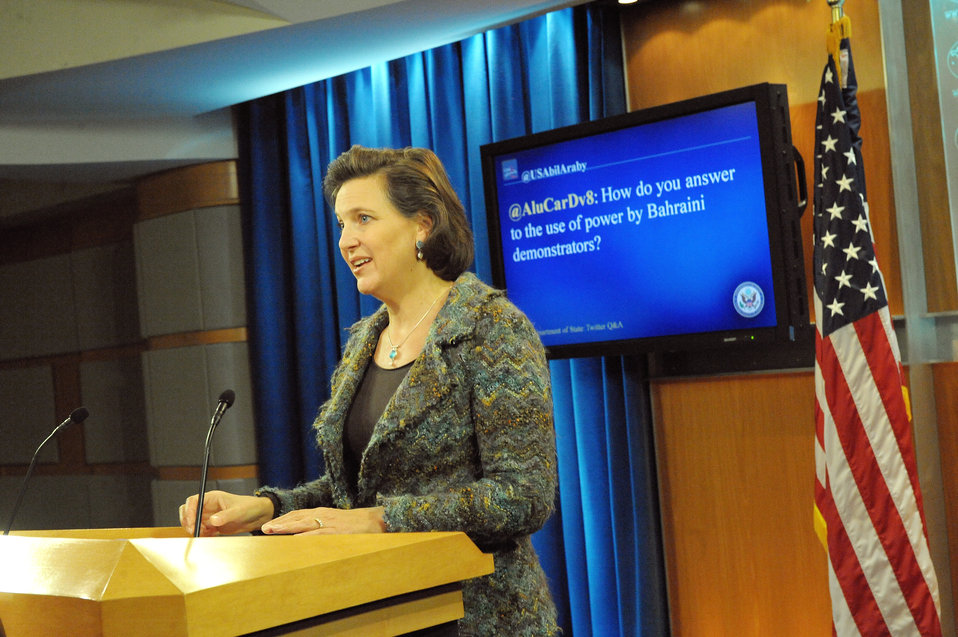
Spokesperson Nuland Responds to a Question from @USAbilAraby

Victoria Nuland, Spokesperson for the U.S. Department of State, answers a question selected from the Department’s official Arabic Twitter feed, @USAbilAraby, on January 13, 2012.